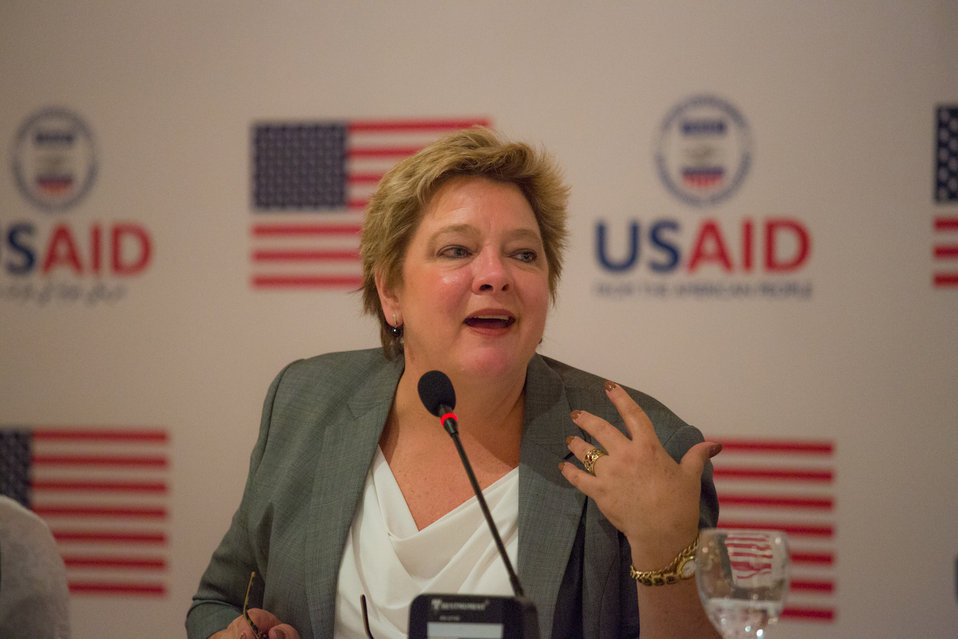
Islamabad, September 6, 2012 - USAID Deputy Mission Director Karen Freeman takes part in the discussion.